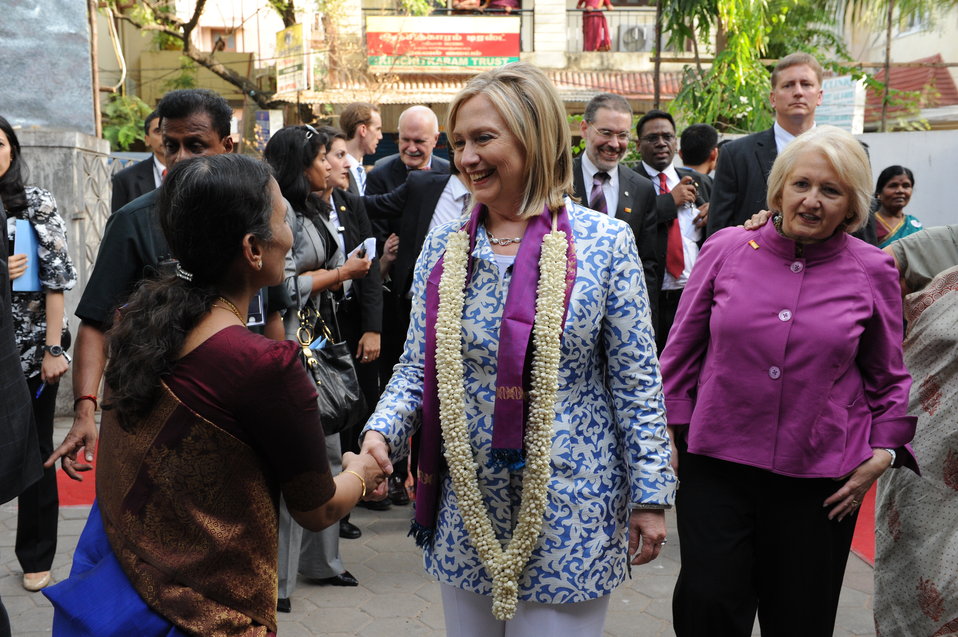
Secretary Clinton and Ambassador Verveer Are Greeted By Dr. Balakrishnan

U.S. Secretary of State Hillary Rodham Clinton, center, and U.S. Ambassador-at-Large for Women’s Issues Melanne Verveer, right, are greeted by Dr. Kalpana Balakrishnan of Sri Ramachandra University, in Chennai, India, on July 20, 2011. [Paul Cohn/ State Department photo]